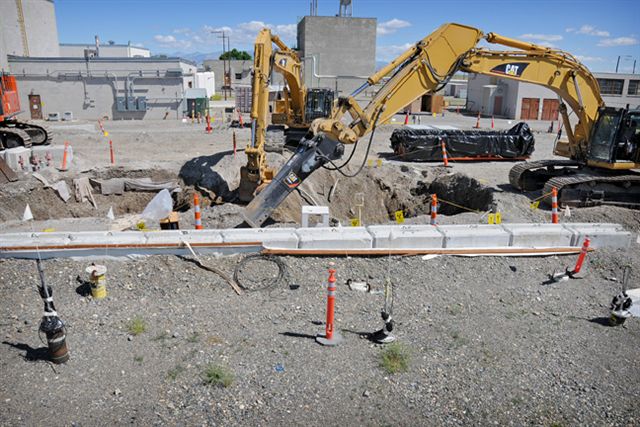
RAN DD RTC S77 TRA-613 EXCAVATION 070610 P6555-005 A